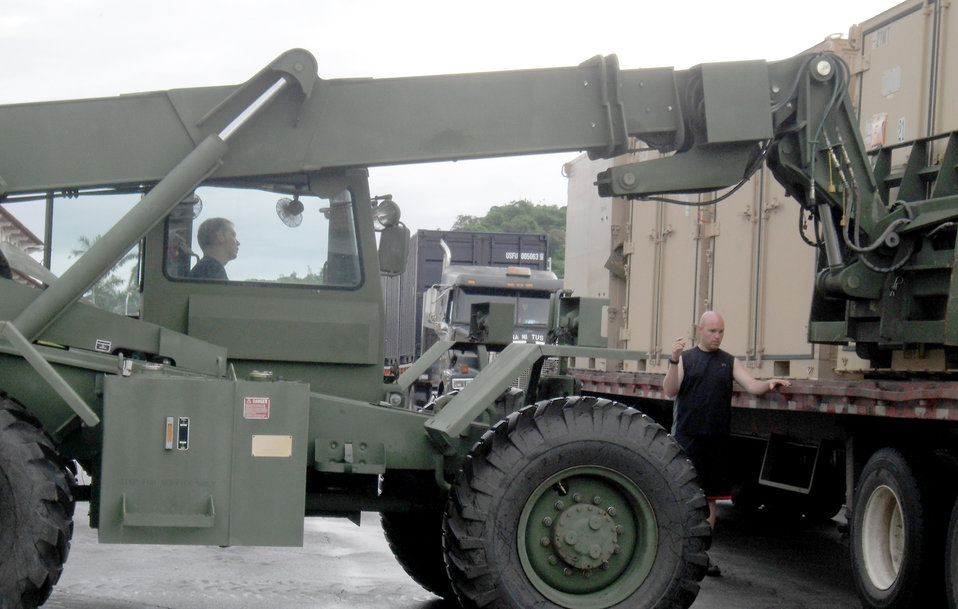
New Horizons Panama 2010

Airmen load the first shipment of materiel for New Horizons Panama 2010 onto trucks in Panama City. New Horizons Panama 2010 is a 12-week humanitarian assistance mission.